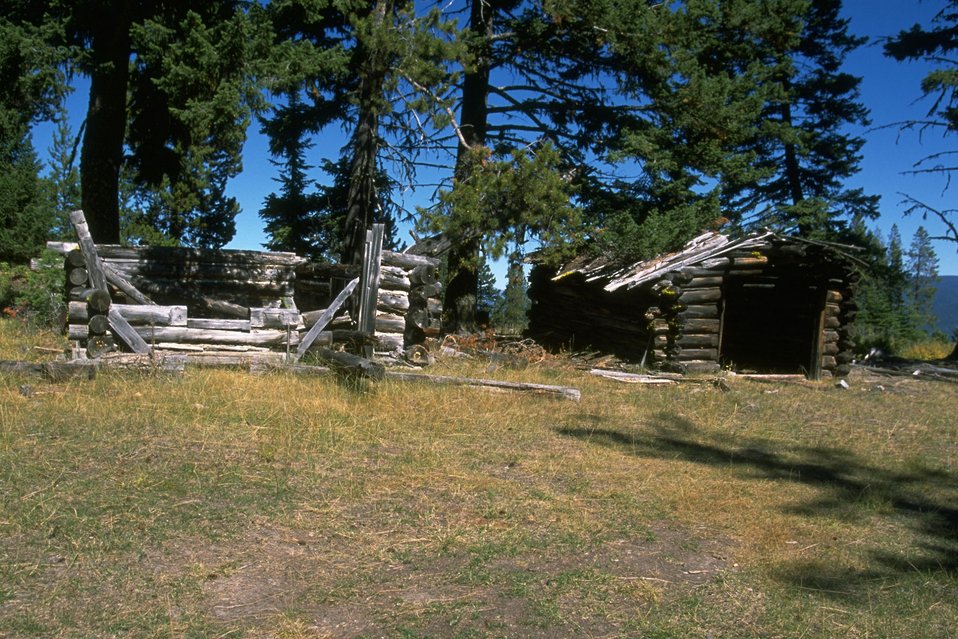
Dilapidated cabing in Coloma Ghost Town